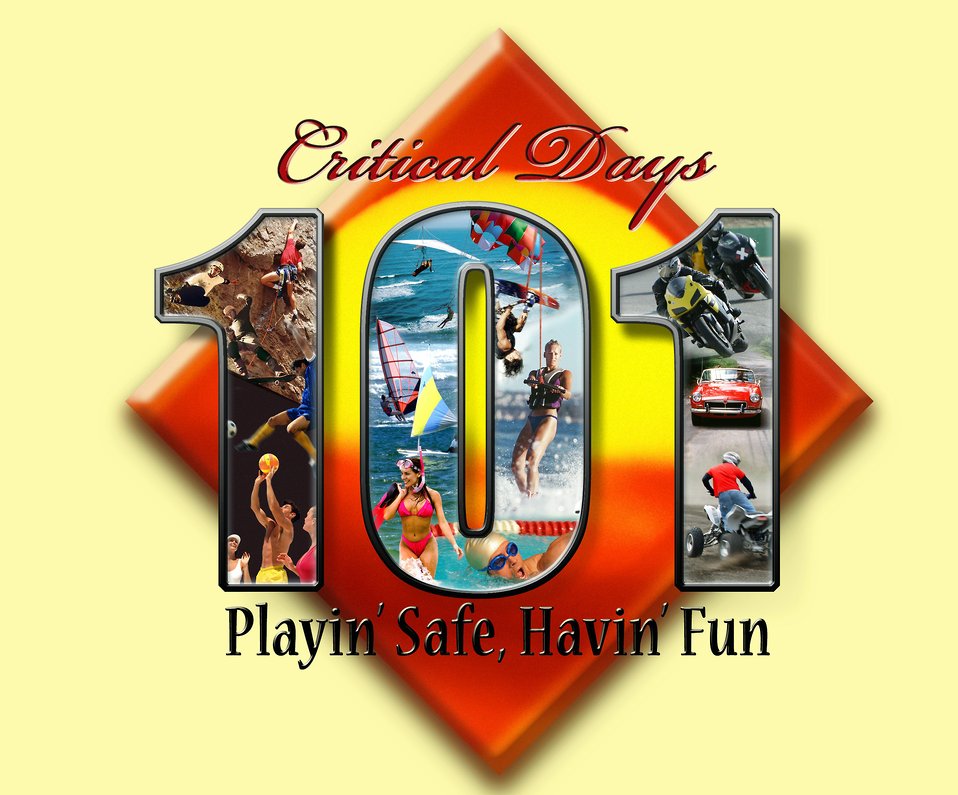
101 Critical Days of Summer

The Air Force's 101 Critical Days of Summer campaign is designed to raise awareness and help people get through the summer with an eye toward safety.